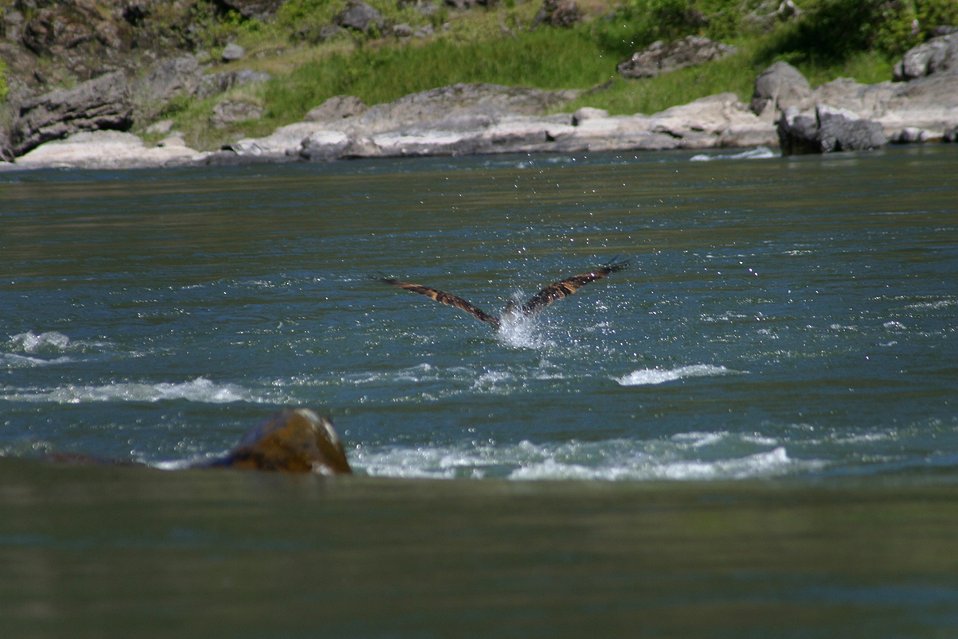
Wild section of the Rogue River from Grave Creek to Foster Bar May 19 to May 22.